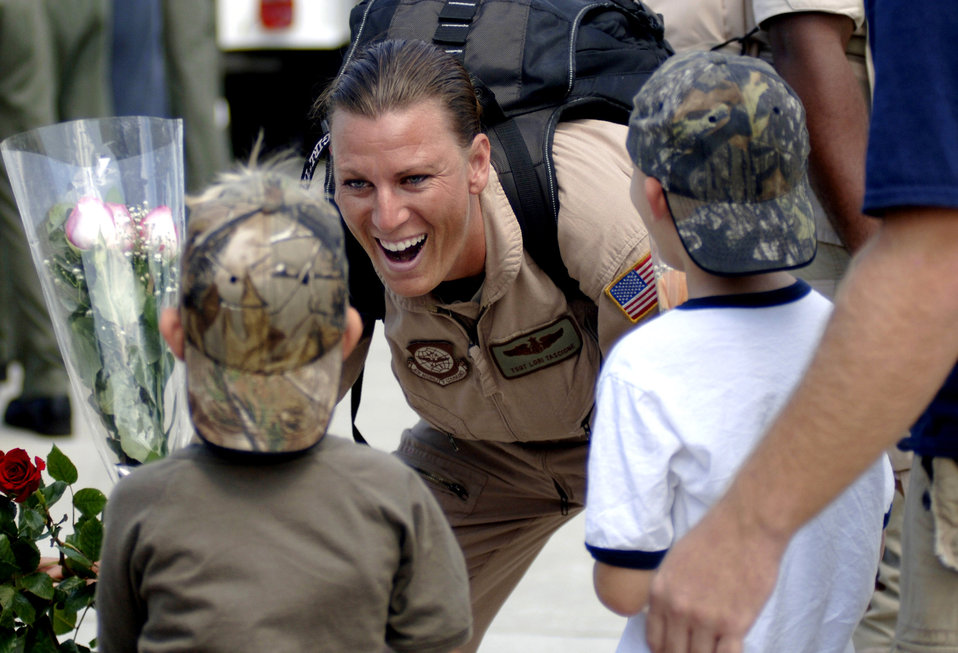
Nothing can be finer than to be in Carolina

Tech. Sgt. Lorry Tascione greets her sons Vincent and Caleb with a smile after a deployment to Southwest Asia Sept. 3 at Charleston Air Force Base, S.C. More than 117 Airmen from the 16th Airlift Squadron returned to Charleston AFB after being deployed for more than four months to Southwest Asia. Sergeant Tascione is a 16th AS loadmaster.